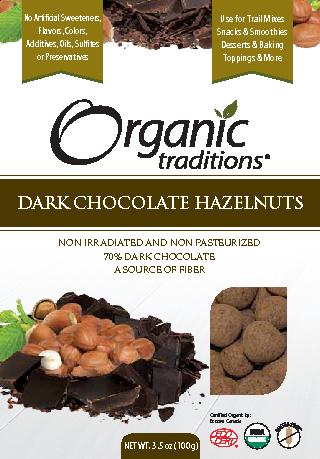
ChocHazelnuts 100g Front4.4375x6.375 US LR